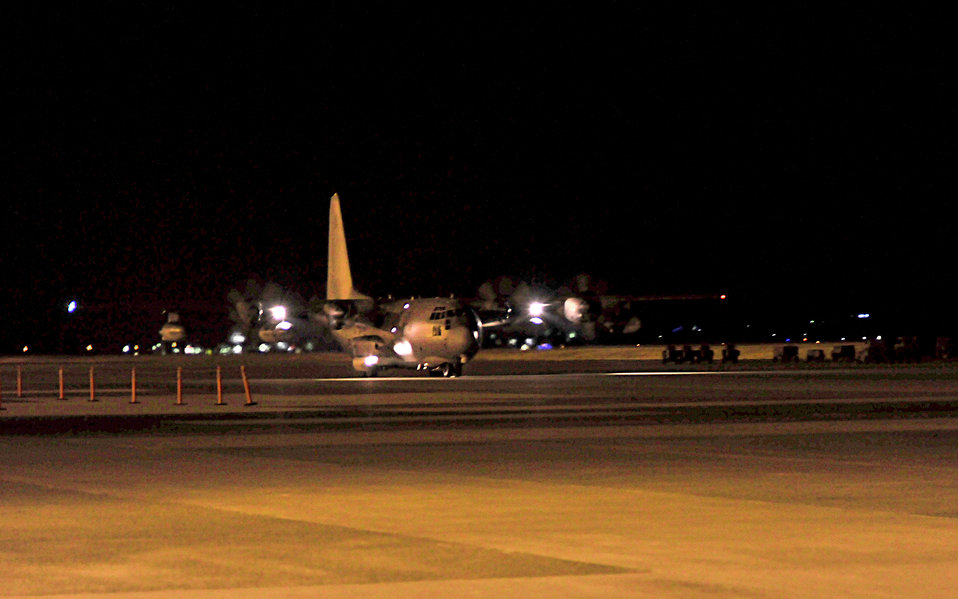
MC-130P Combat Shadow

An MC-130P Combat Shadow carrying Airmen arrives March 13, 2011, at Yokota Air Base, Japan. The flight was part of American disaster relief forces to assist the earthquake and tsunami recovery effort.